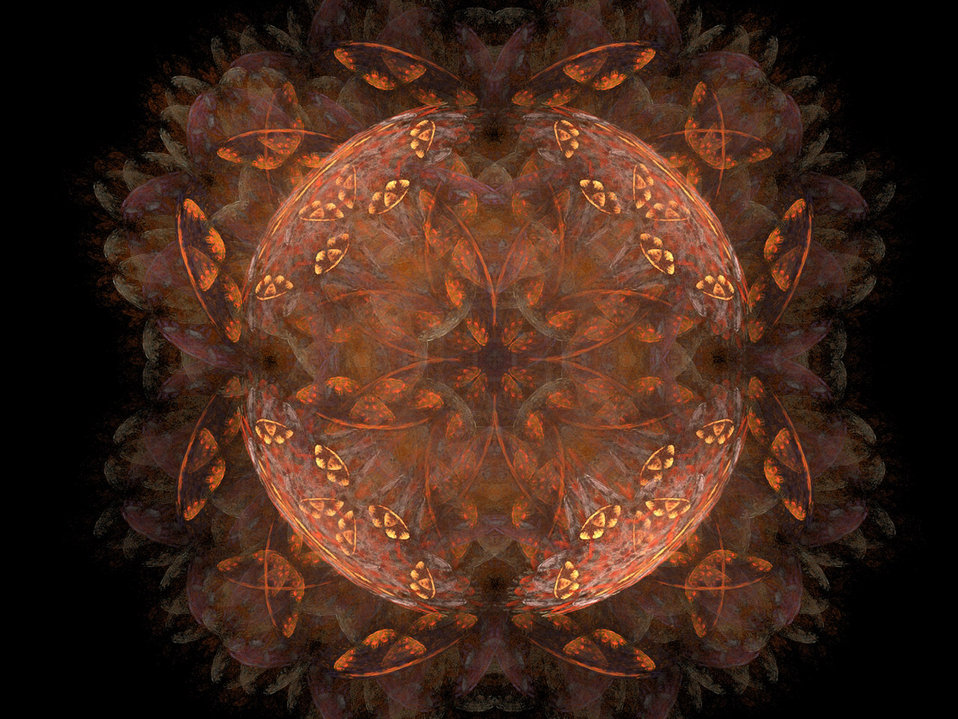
Fractal

Interesting shaped fractal in brown, red, orange.